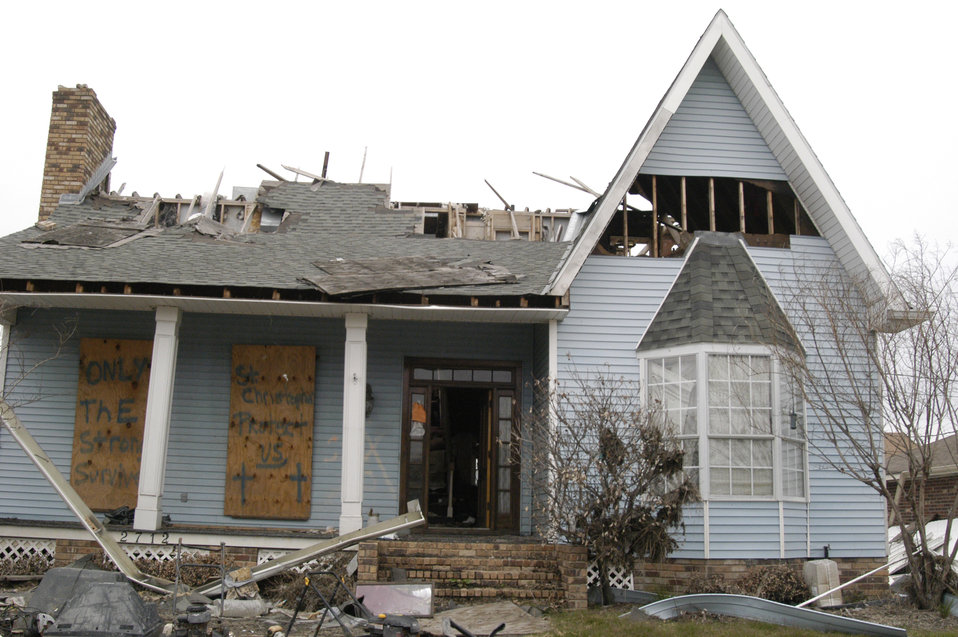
The 20-foot storm surge and floodwaters with fierce high winds from Hurricane Katrina severely damaged this house in St. Bernard’s Parish, LA. Katrina made landfall on Monday morning, August 29, 2005 as a Category 3 hurricane with sustained winds of 125 mph with over a 20-foot storm surge. Katrina caused catastrophic damage over 90 thousand square miles across Louisiana with an estimated $75 billion dollars in damage. The total economic impact to the Gulf Coast was estimated at over $150 billion. 80% of New Orleans, LA, was underwater with some areas more than 20 feet deep. Less than a month later southern Louisiana was struck by a second Category 3 hurricane Rita inflicting more damage in the southwestern areas of Louisiana adding an addition $12 billion worth of damage to the already beleaguered state. The U. S. Army Corps of Engineers (USACE) under the auspices of Federal Emergency Management Agency (FEMA) was the lead service in providing assistance to the citizens of Louisiana. The U. S. Department of Agriculture (USDA) supplied emergency food aid, emergency loan assistance to farmers and home owners, and USDA personnel from around the nation volunteered their time and muscle to aid in the recovery operations.